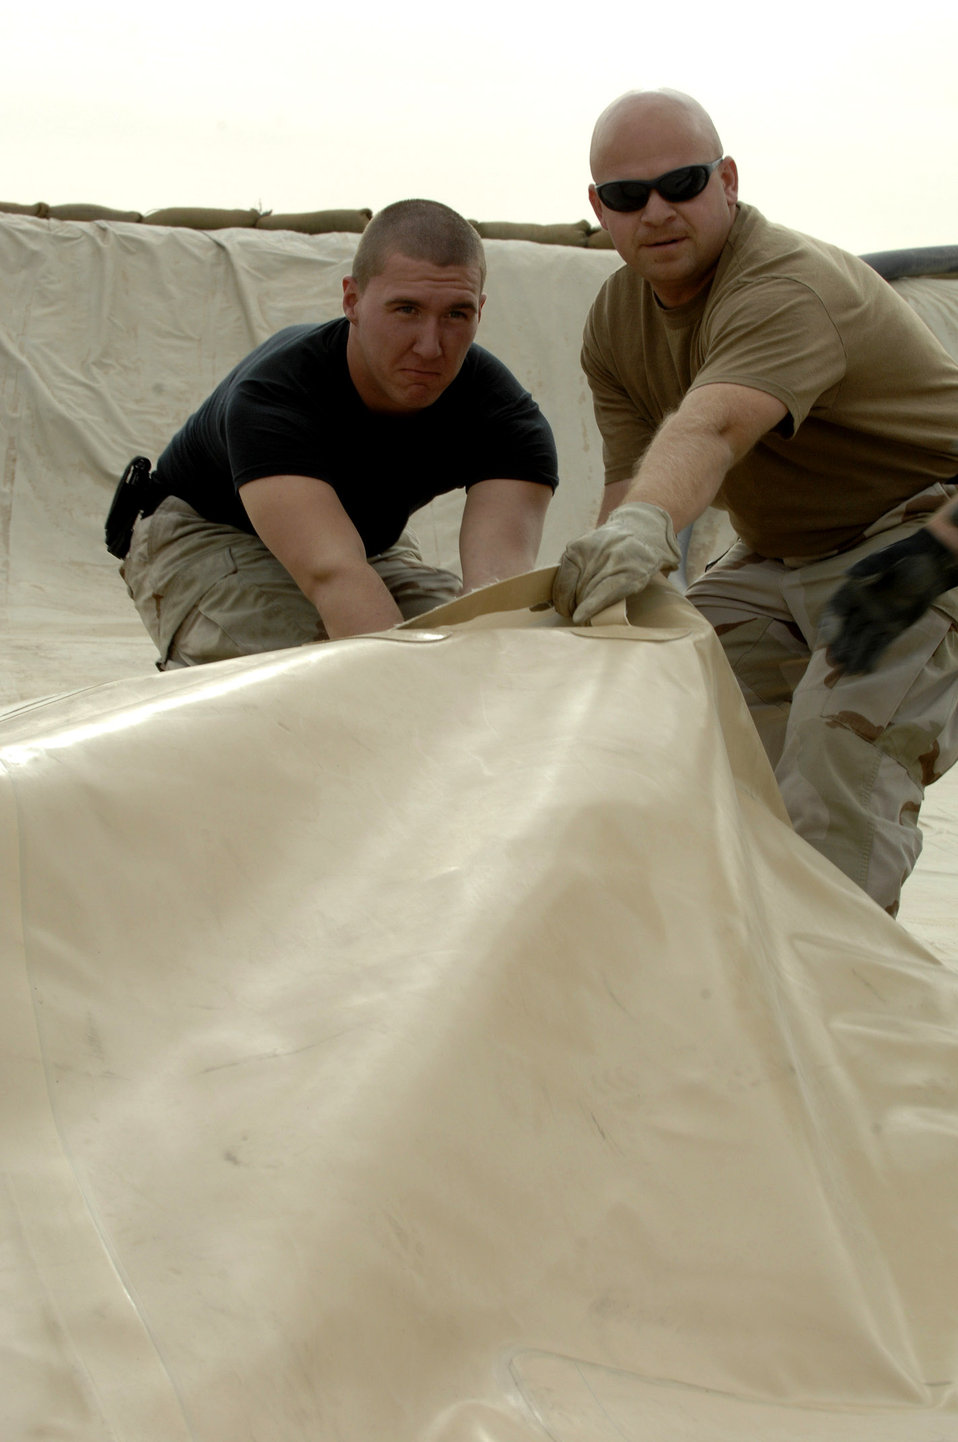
Completing a bladder transplant

Airman 1st Class Mark Wilson (left) and Staff Sgt. Jamie Crooks pull unroll a new 900-pound fuel bladder Dec. 3 at Ali Base, Iraq. Airmen from the 407th Expeditionary Logistics Readiness Squadron fuels shop periodically replace fuel bladders to prevent ruptures. The new bladder can hold up to 50,000 gallons of fuel. Airman Wilson is deployed from Kadena Air Base, Japan, and Sergeant Crooks is deployed from Yokota Air Base, Japan.